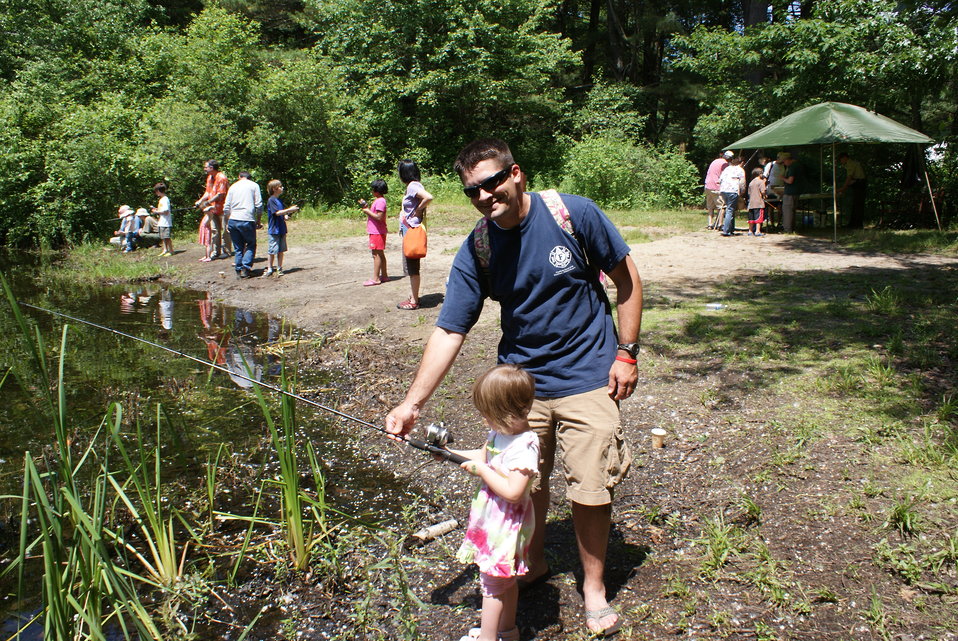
Great Meadows Fishing Day 2010

Great Meadows National Wildlife Refuge in Massachusetts holds an annual fishing day where all anglers -- beginners and experienced -- join refuge staff and other experts for a day filled with fishy fun!

Visitors learn how to fly-cast, spin-cast, and even tie your own fly. All equipment and instruction is provided, and there are always games, crafts, music and face painting as well.